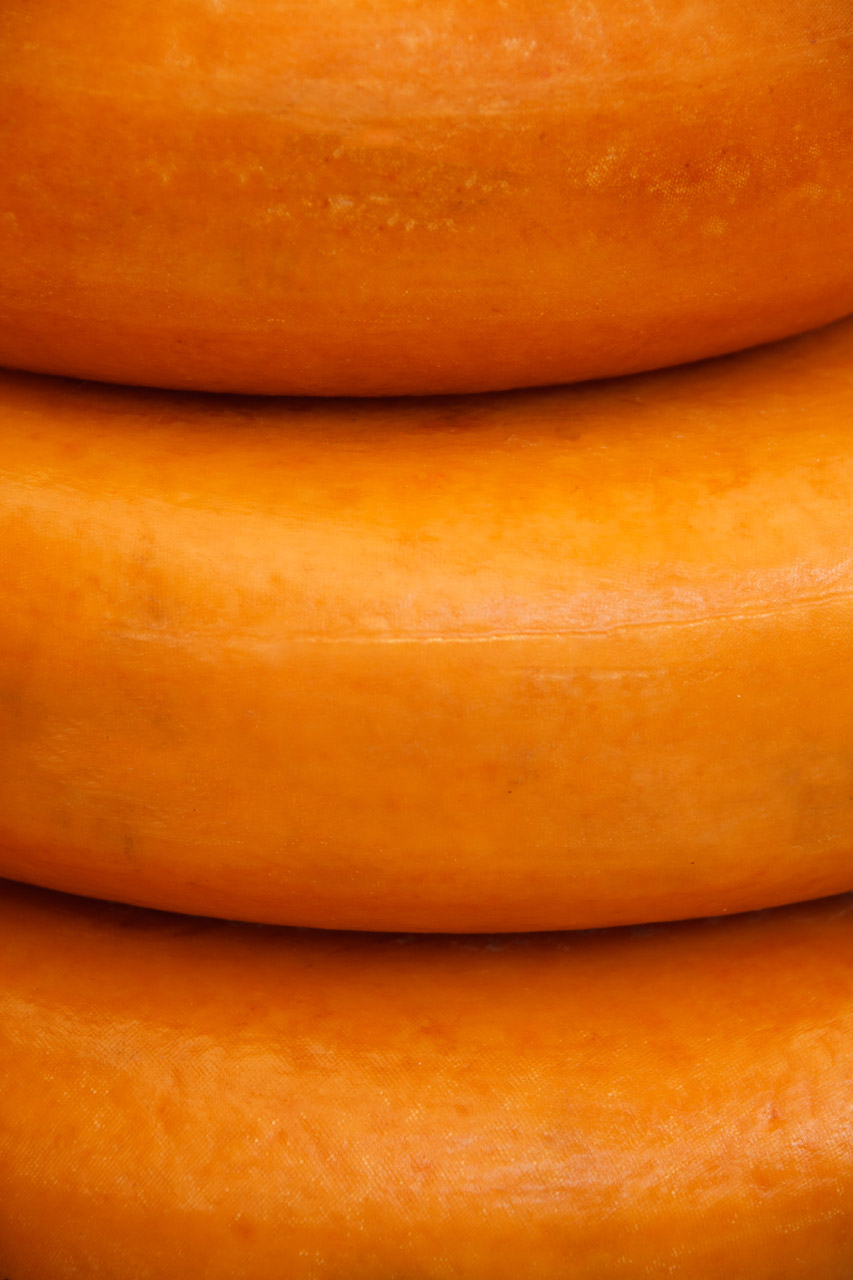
Cheese background

Dutch cheese background image.